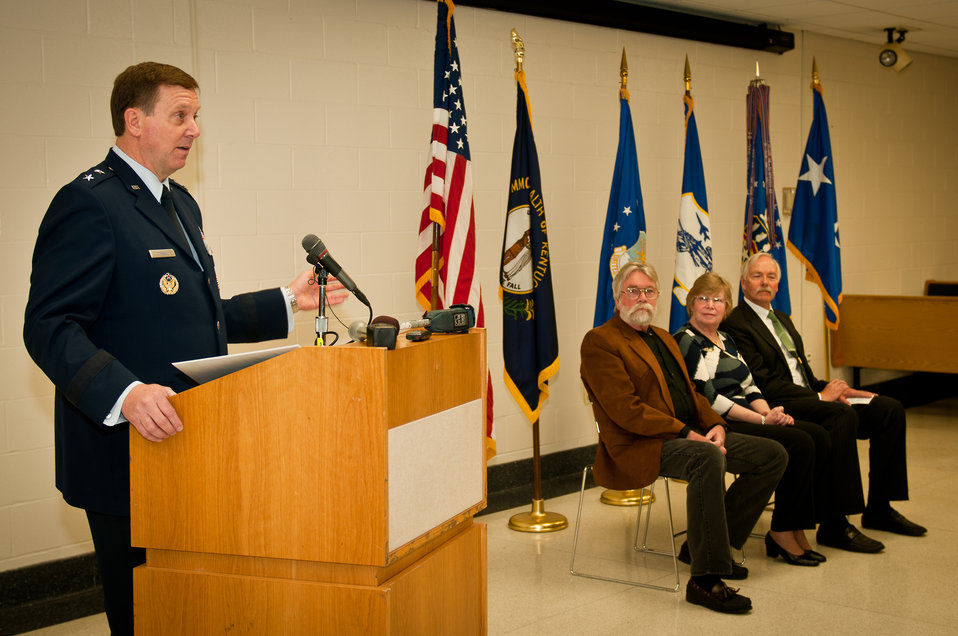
Prisoner of War Medal

Maj. Gen. Edward W. Tonini, the Kentucky adjutant general, speaks about the sacrifice of the late Capt. Merlin R.